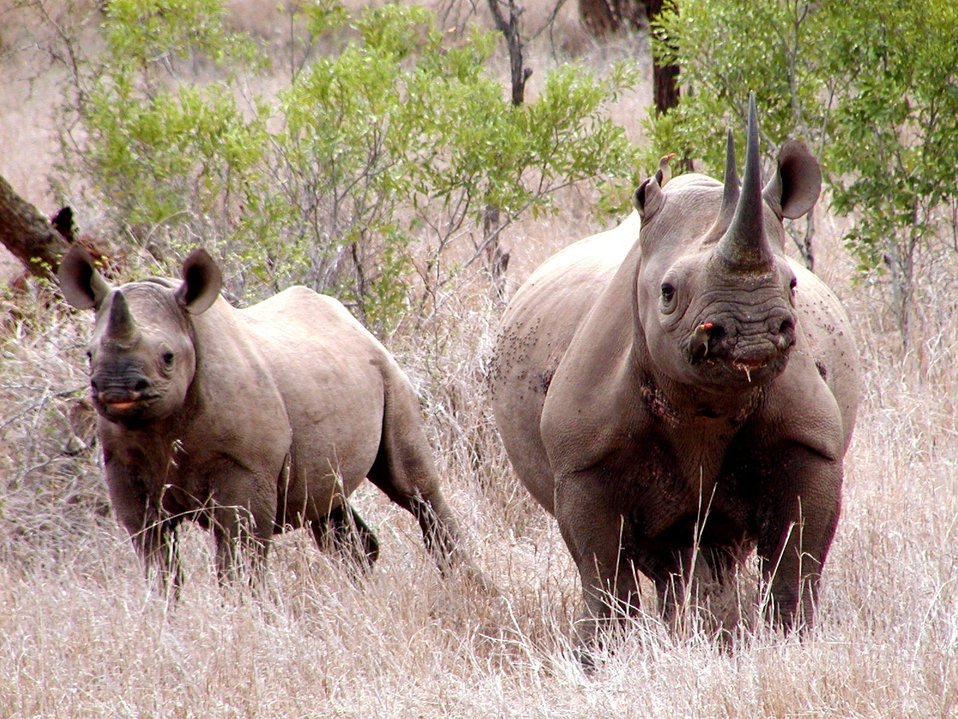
Black rhinos

Mkhuze, South Africa